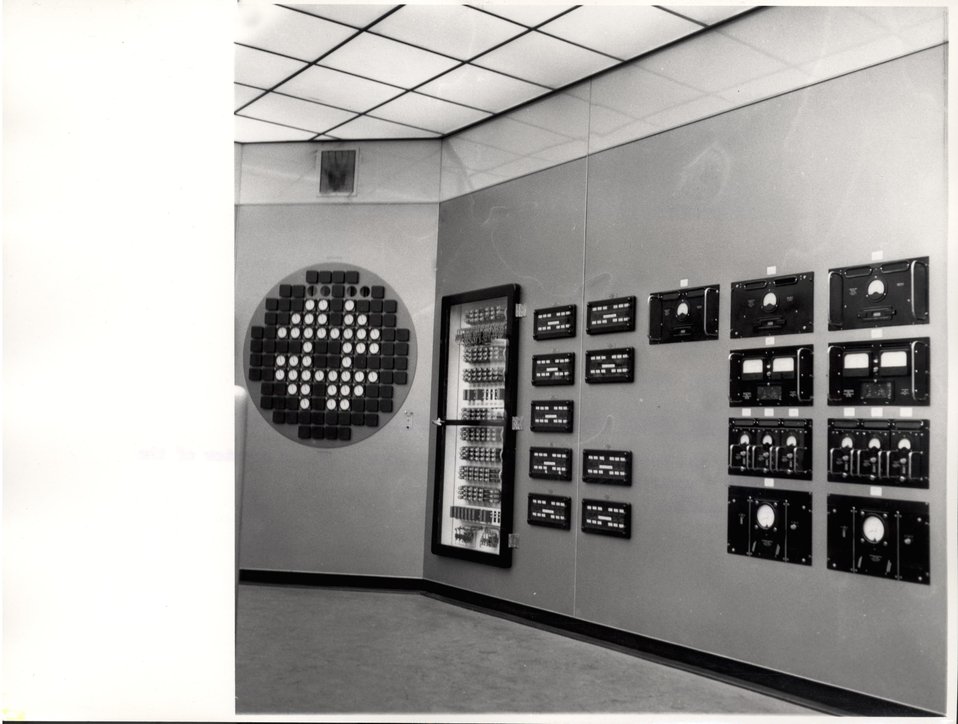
Britain's First Atomic Power Station, Calder Hall. Some of the instruments in the control room of No. 1 reactor of the Calder Hall A power station. c. 1956